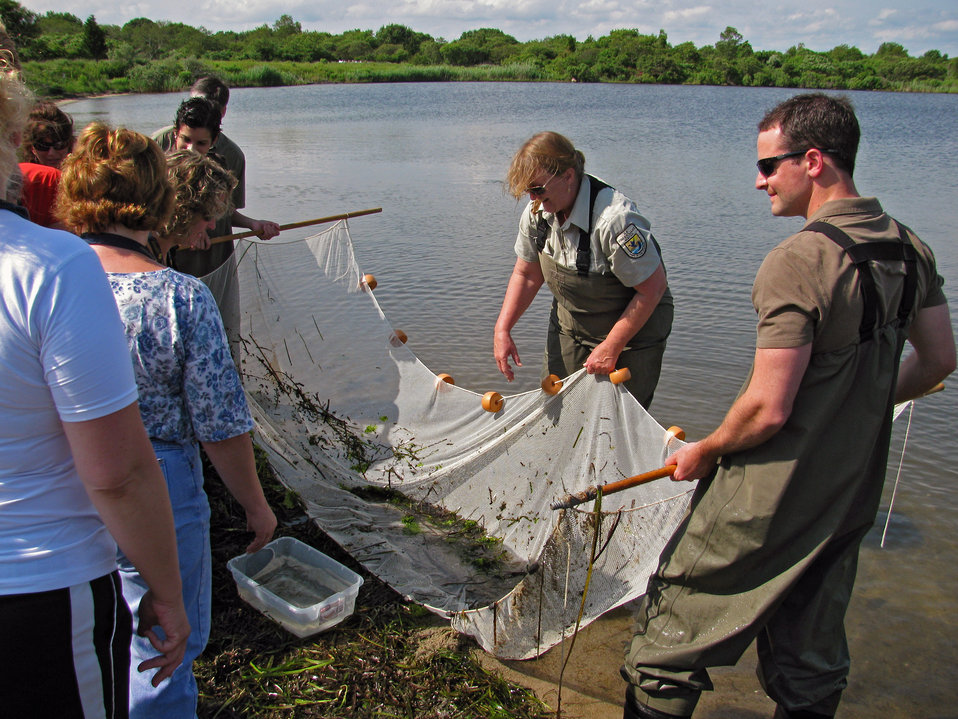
Volunteers

Ninigret National Wildlife Refuge, RI.